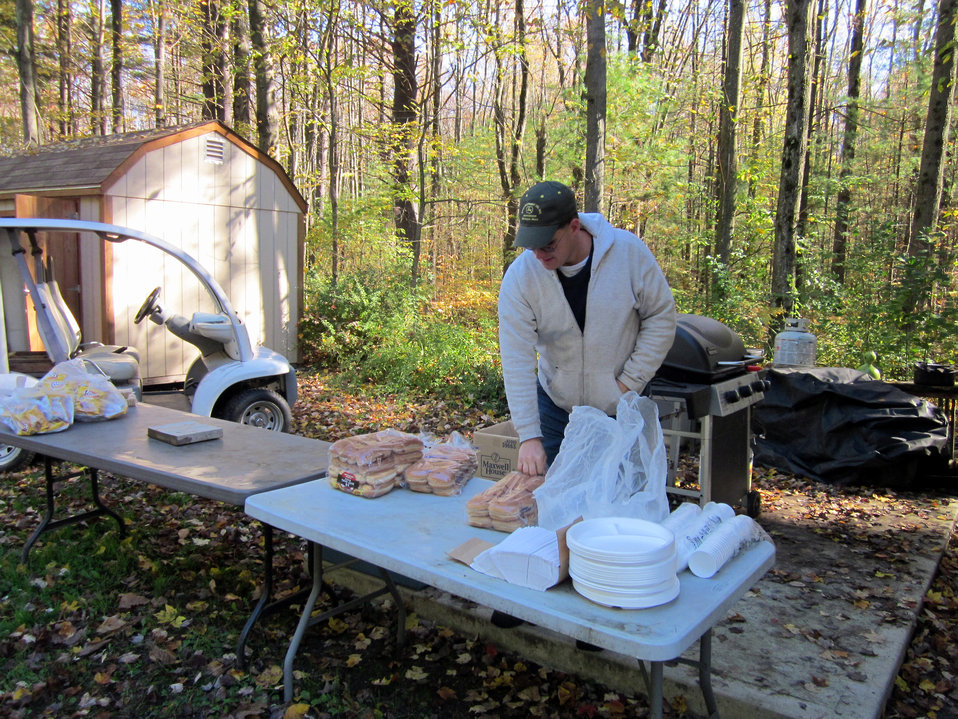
Preparing for the feed

October 13, 2012, Sunderland, MA: Volunteer Andy Ostrowski prepares food for hungry anglers at a fishing event for veterans at the U.S. Fish and Wildlife Service's Richard Cronin National Salmon Station.